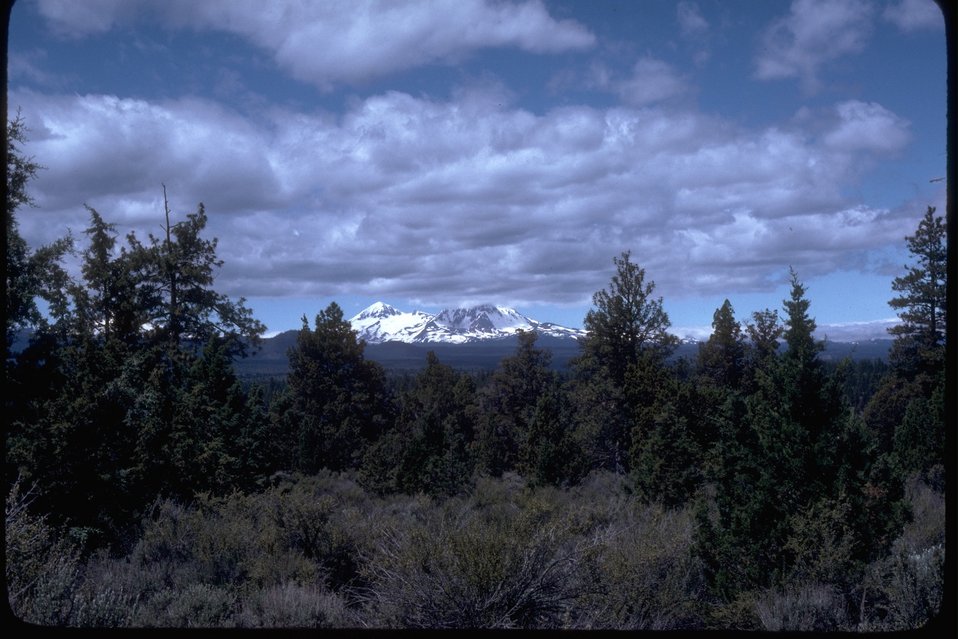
Juniper invasion with Mount Jefferson in background.